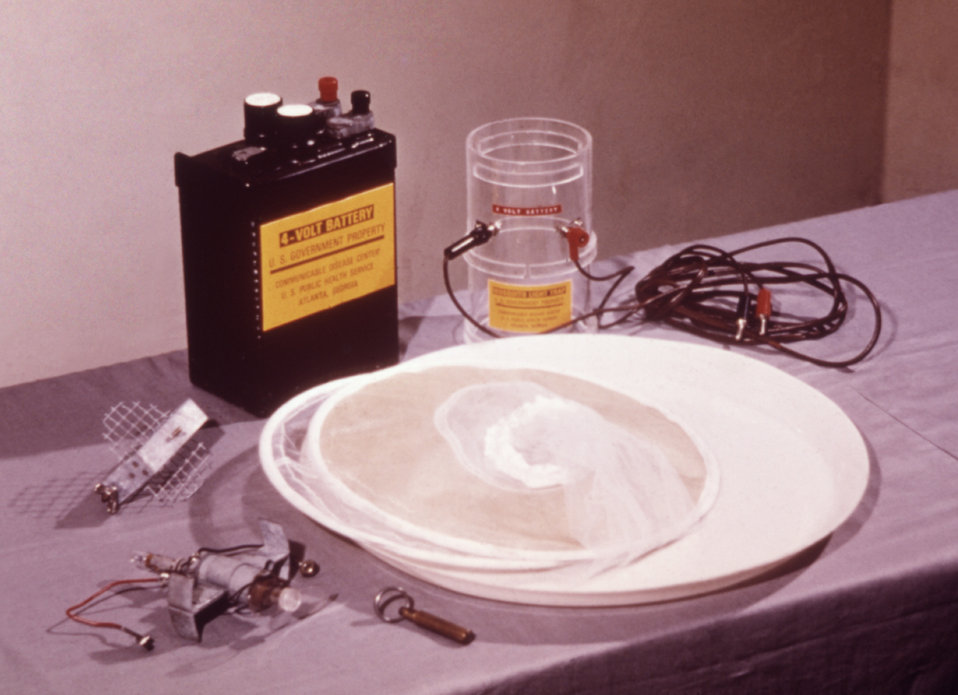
This photograph shows a disassembled CDC portable light trap used for catching mosquitoes.